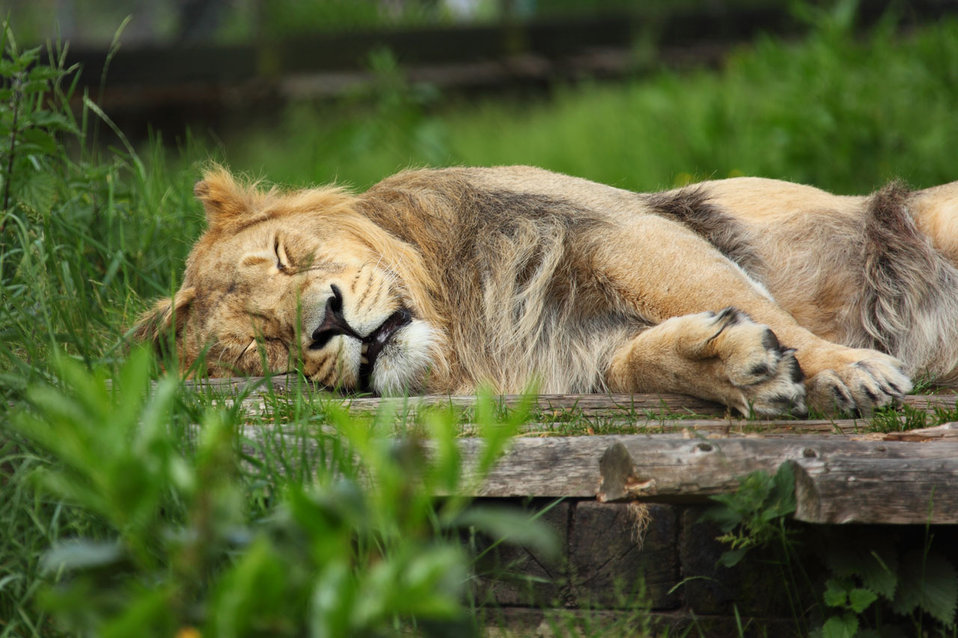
Sleeping lion in chester zoo.